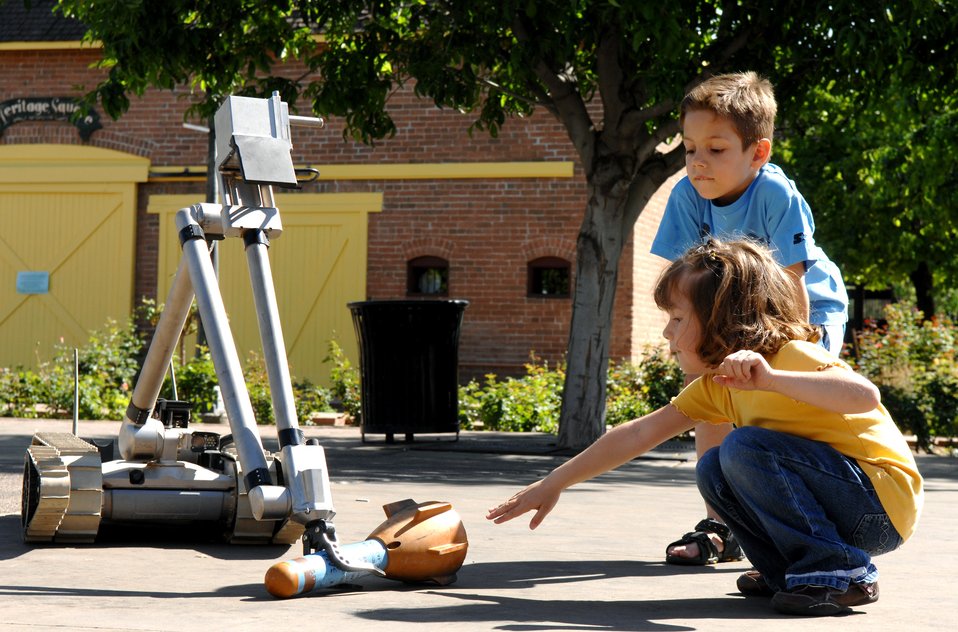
Air Force Week displays highlight airpower

Antonia Ortiz, age 6, and Teresa Ortiz, age 4, watch as an explosive ordnance disposal robot reaches down to retrieve a simulated bomb March 20. The display was part of Air Force Week at the Arizona Science Center in downtown Phoenix.